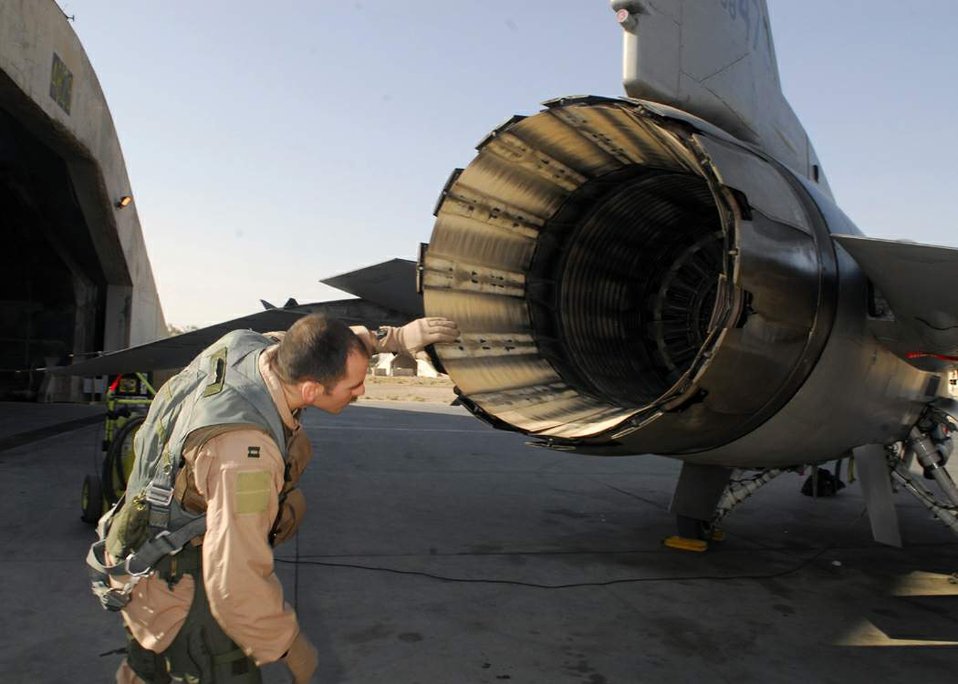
Dec. 28 airpower summary: F-16s strike enemy in Iraq

Capt. Thomas Graham inspects the exhaust system of an F-16 Fighting Falcon during a preflight inspection at Balad Air Base, Iraq. The exterior and interior of the aircraft are examined to ensure that everything is operating properly before flying missions in support of Operation Iraqi Freedom. Captain Thomas is assigned to the 4th Expeditionary Fighter Squadron.